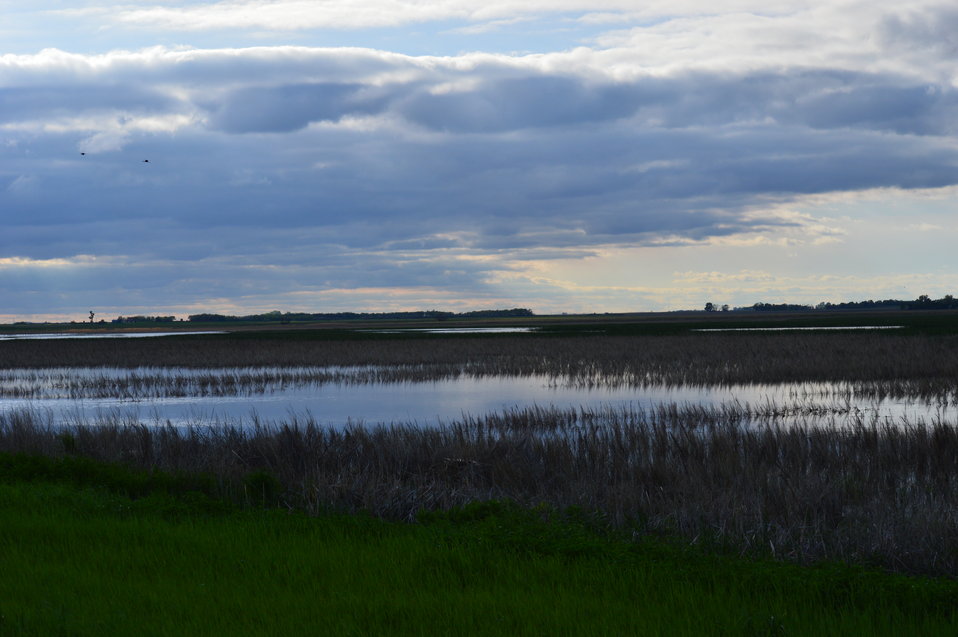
Dusk at Sand Lake NWR

Scenery and wildlife at Sand Lake National Wildlife Refuge in South Dakota